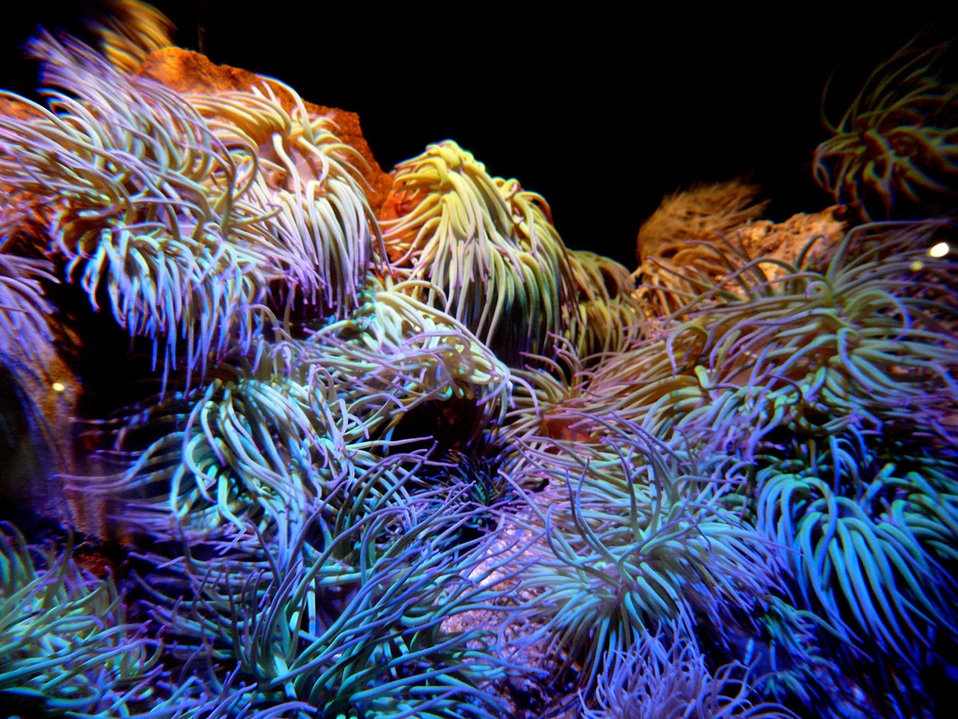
Coral in aquarium.